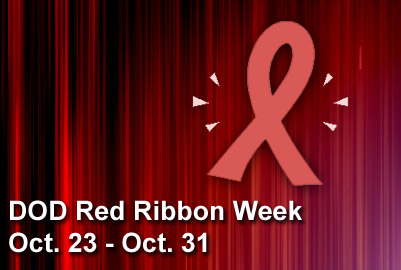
Red Ribbon Week

The national Red Ribbon Week is designed to raise public awareness of drug prevention programs. DOD's Red Ribbon Week program also targets smoking and alcohol abuse in addition to drug abuse.